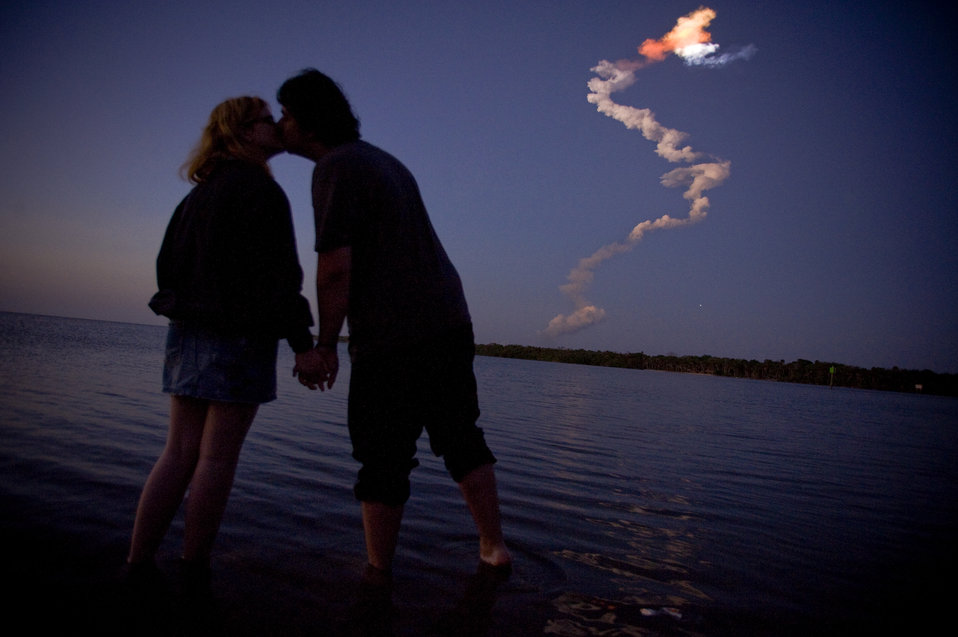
Shuttle STS-119

A young couple, Joe Hennessy and Caitlin Dullaghan, share a kiss in the Indian River as the space shuttle orbiter disappears from the horizon, March 16, Cape Canaveral, Fla.